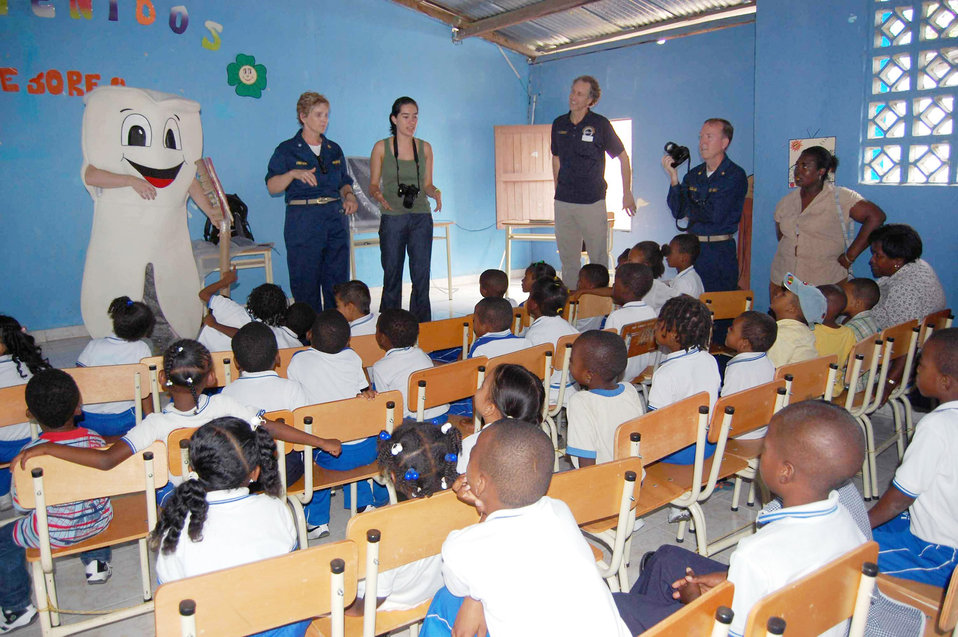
Dental team teaches oral hygiene

Members from the dental team assigned to Military Sealift Command hospital ship USNS Comfort teach an oral hygiene class for 400 students at Chilvi School in Tumaco, Colombia June 15 in support of Continuing Promise 2009. CP09 is a four month humanitarian and civic assistance mission to seven countries in Latin America and the Caribbean. Comfort is scheduled to be in Colombia until June 17.